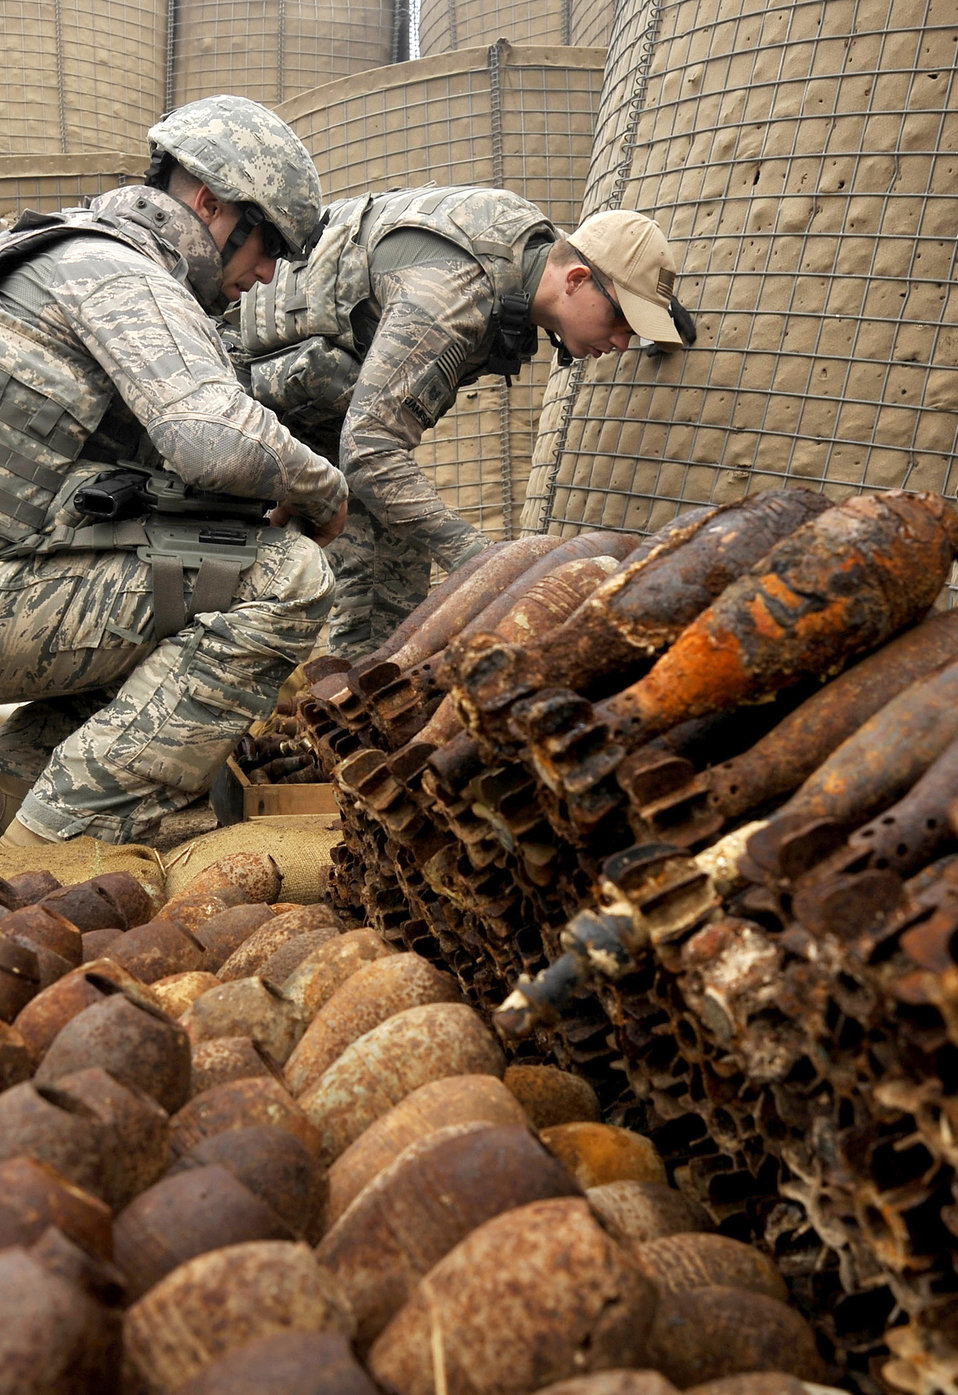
Staff Sgts. Cody Flood and Michael Jamison collect data on explosives in preparation for a controlled detonation Nov. 23, 2009, at Mahmudiyah, Iraq. Sergeants Flood and Jamison are 447th Expeditionary Civil Engineer Squadron explosive ordnance disposal technicians.